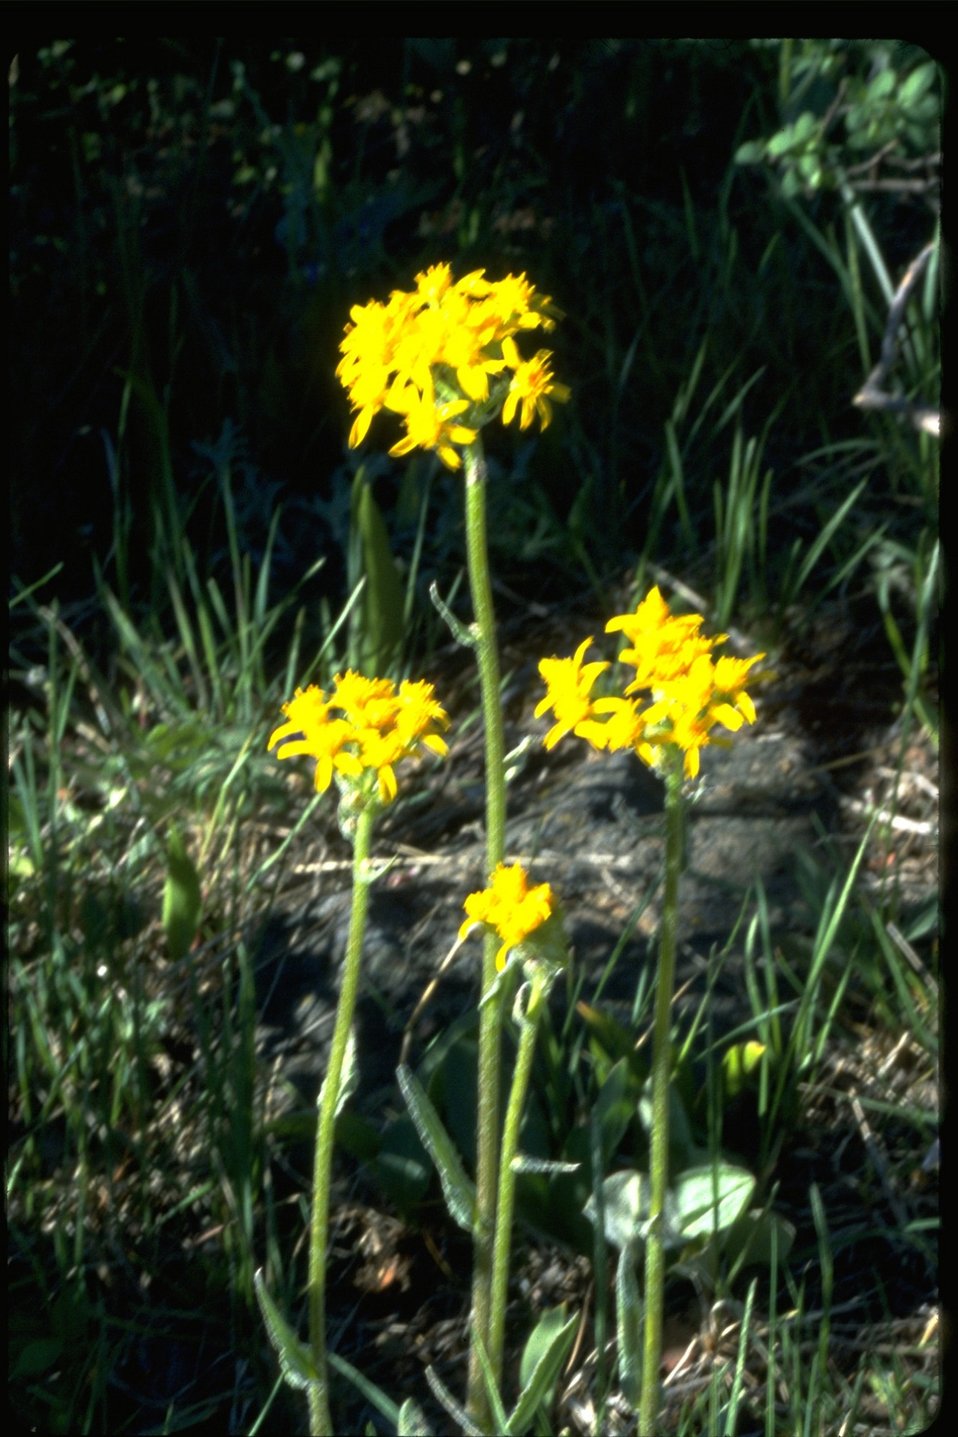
Medium shot of Arrowleaf Groundsel.